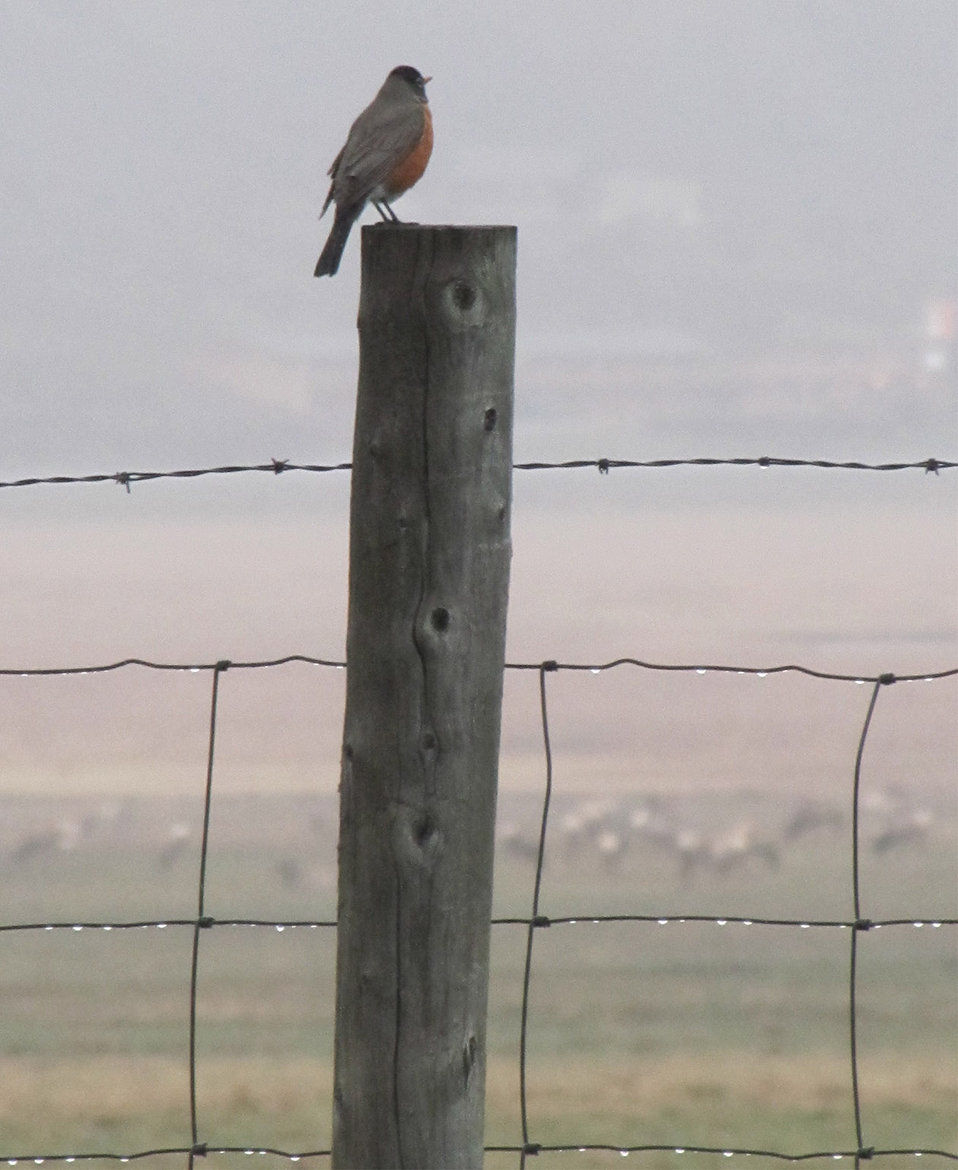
Rainy Spring Morning

A robin keeps watch outside the administrative offices as elk browse in the background at the National Elk Refuge.